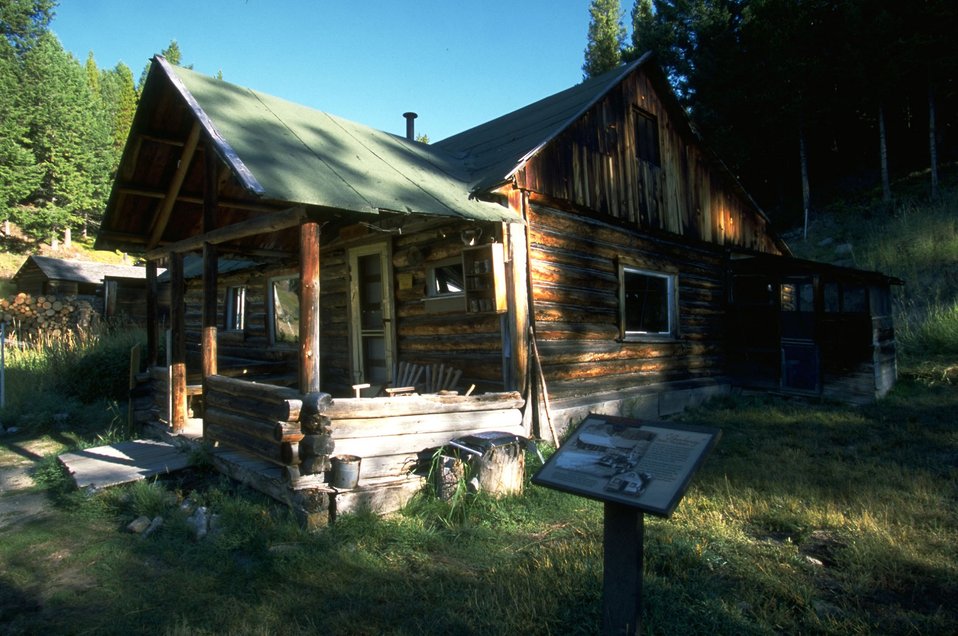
Dahl Cabin in Garnet Ghost Town